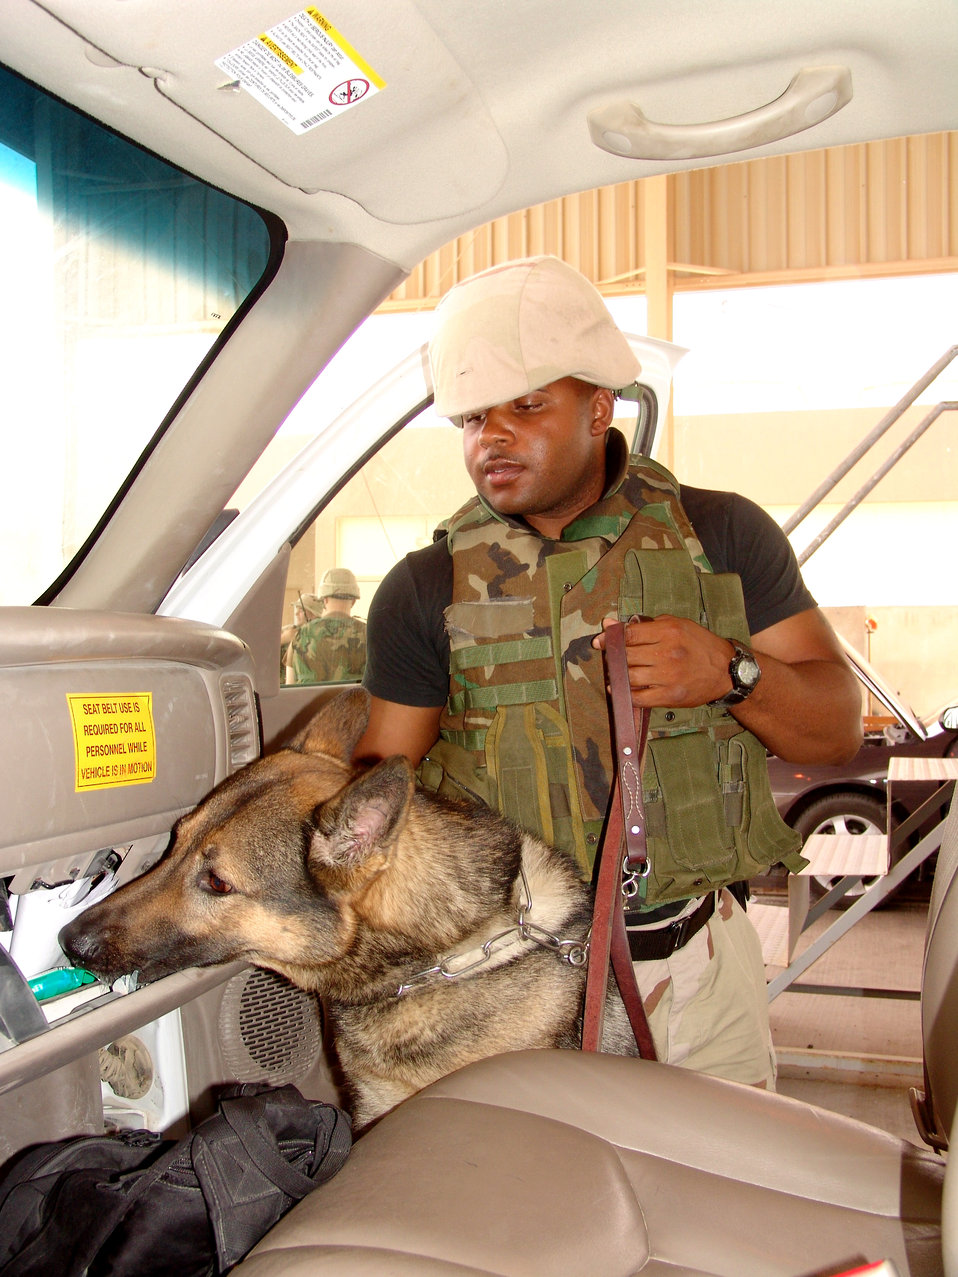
All secure

SOUTHWEST ASIA -- Staff Sgt. Ossian Satterwhite and his military working dog, Bojar, search a vehicle for explosives at the main gate at a forward-deployed location. Sergeant Satterwhite is a K-9 handler with the 386th Expeditionary Security Forces Squadron and is deployed from Kadena Air Base, Japan.